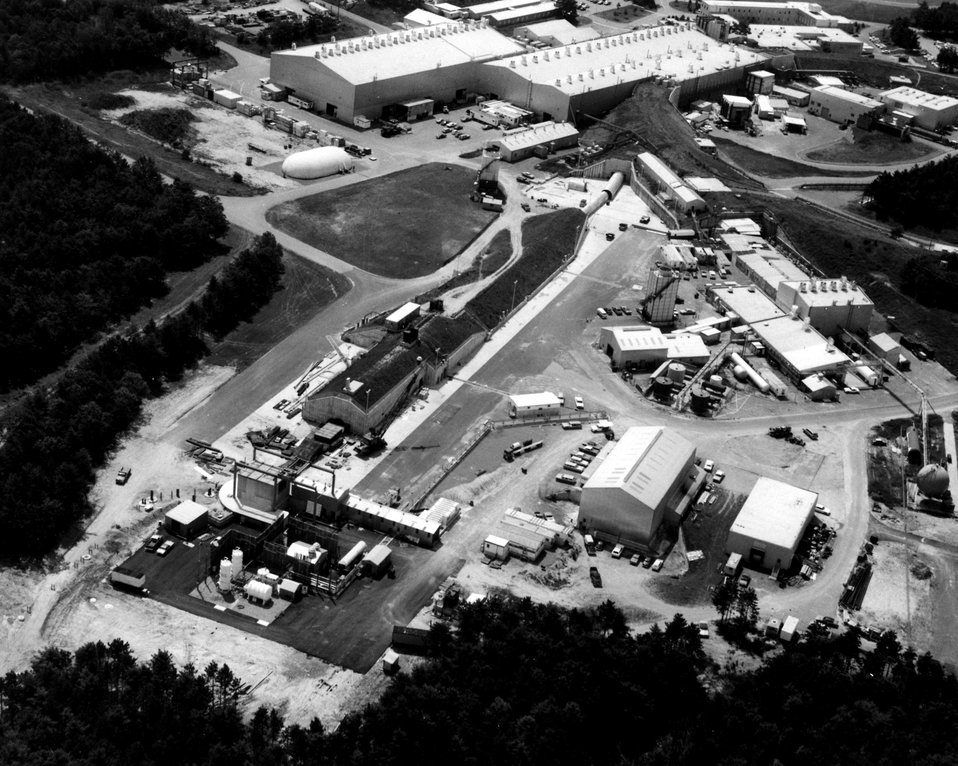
Aerial view of the Alternating Gradient
Synchrotron at the U.S. Atomic Energy Commission's Brookhaven National Laboratory.